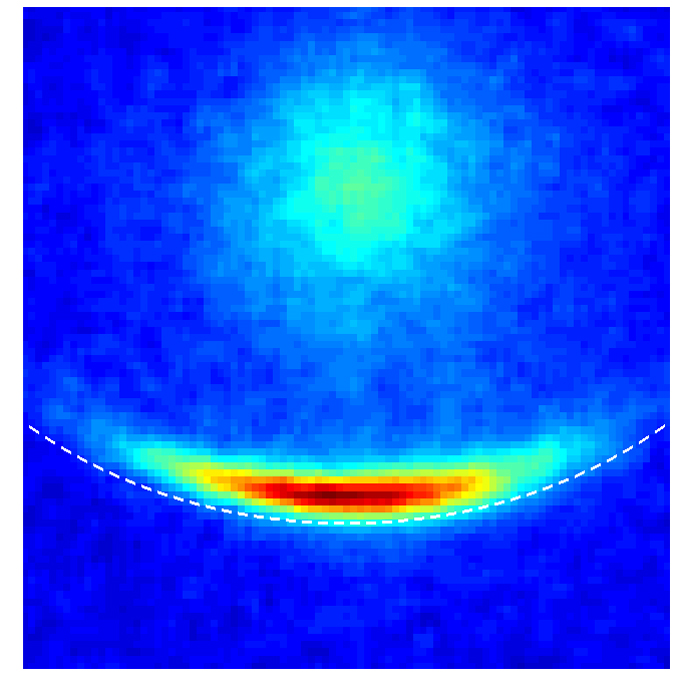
Innovative Atom Trap Catches Highly Magnetic Atoms